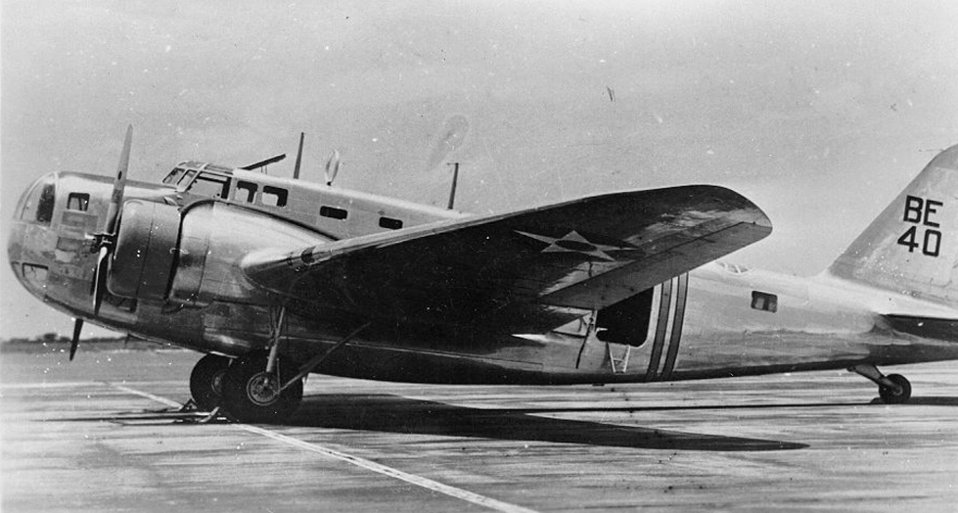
B-18

A Douglas B-18 Bolo sits on the ramp at Hickam Field, Hawaii, in January, 1940.